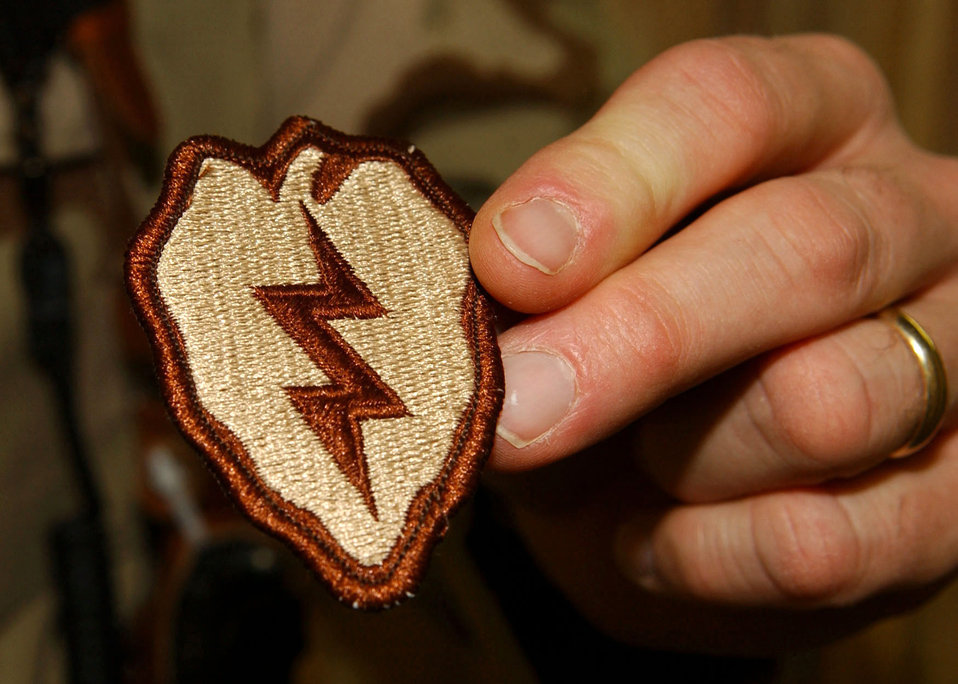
Air Force engineers help Soldiers build field bases

BAGRAM AIR BASE, Afghanistan -- An Airman shows off his newly acquired wartime service patch. Army leaders award the shoulder-sleeve insignia to troops assigned to Army units serving in combat zones including 11 Airmen here.